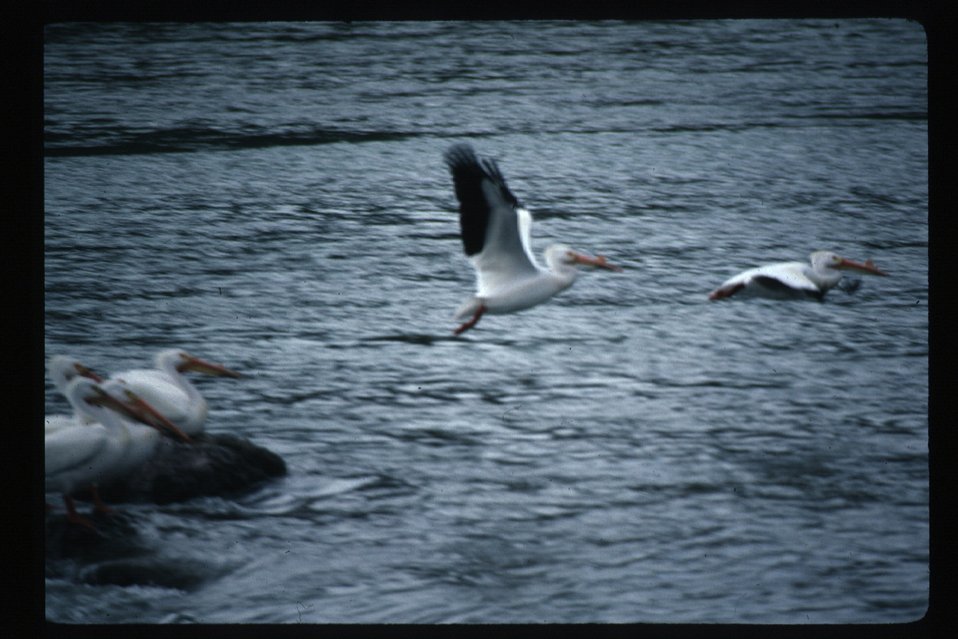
Pelicans on Snake River Wildlife USRD Upper Snake River District